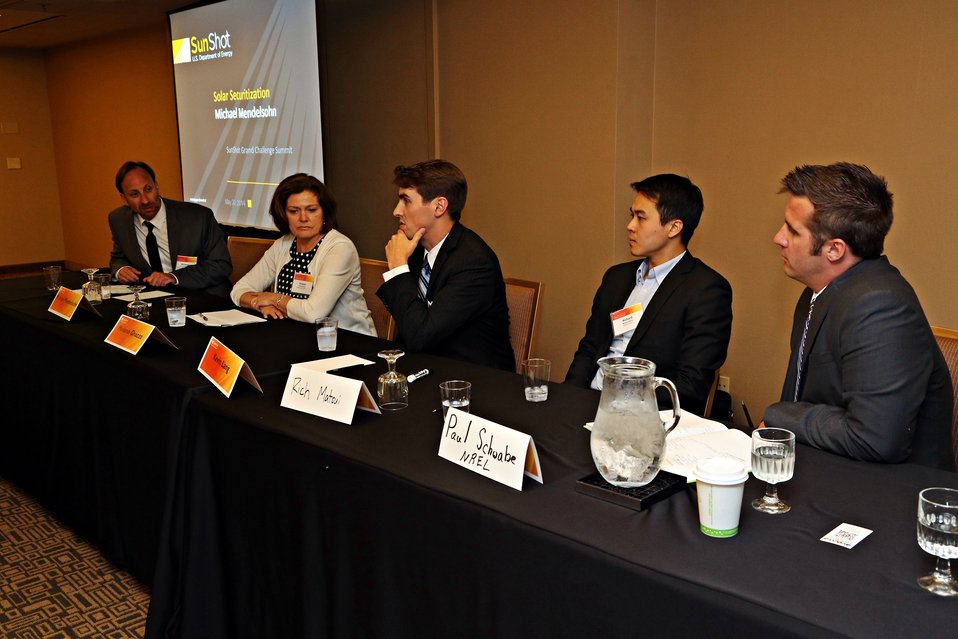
Breakout Sessions 2